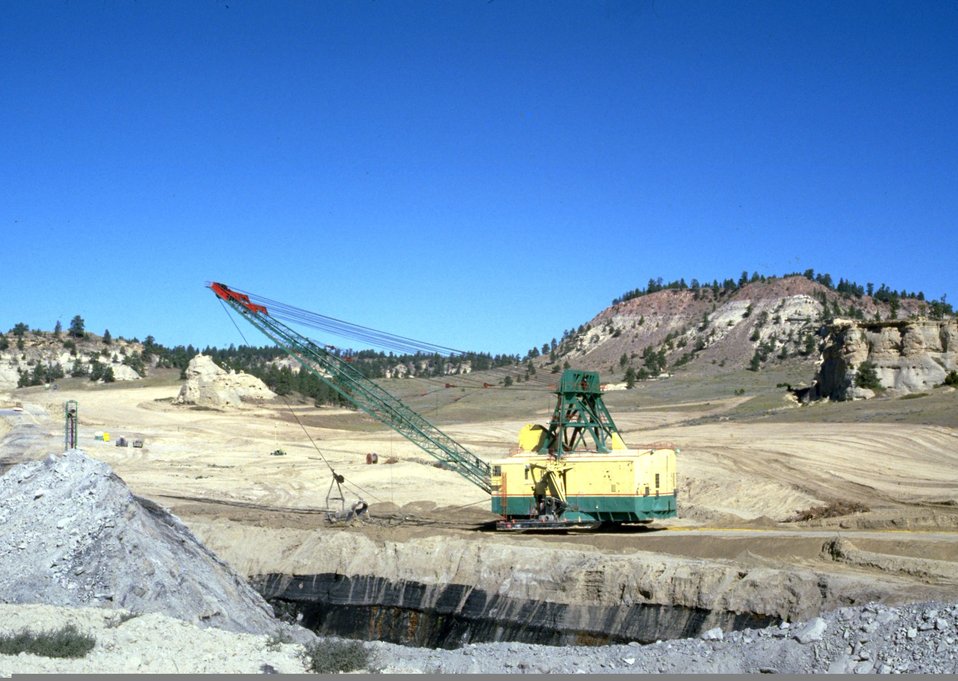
Coal Mining operation